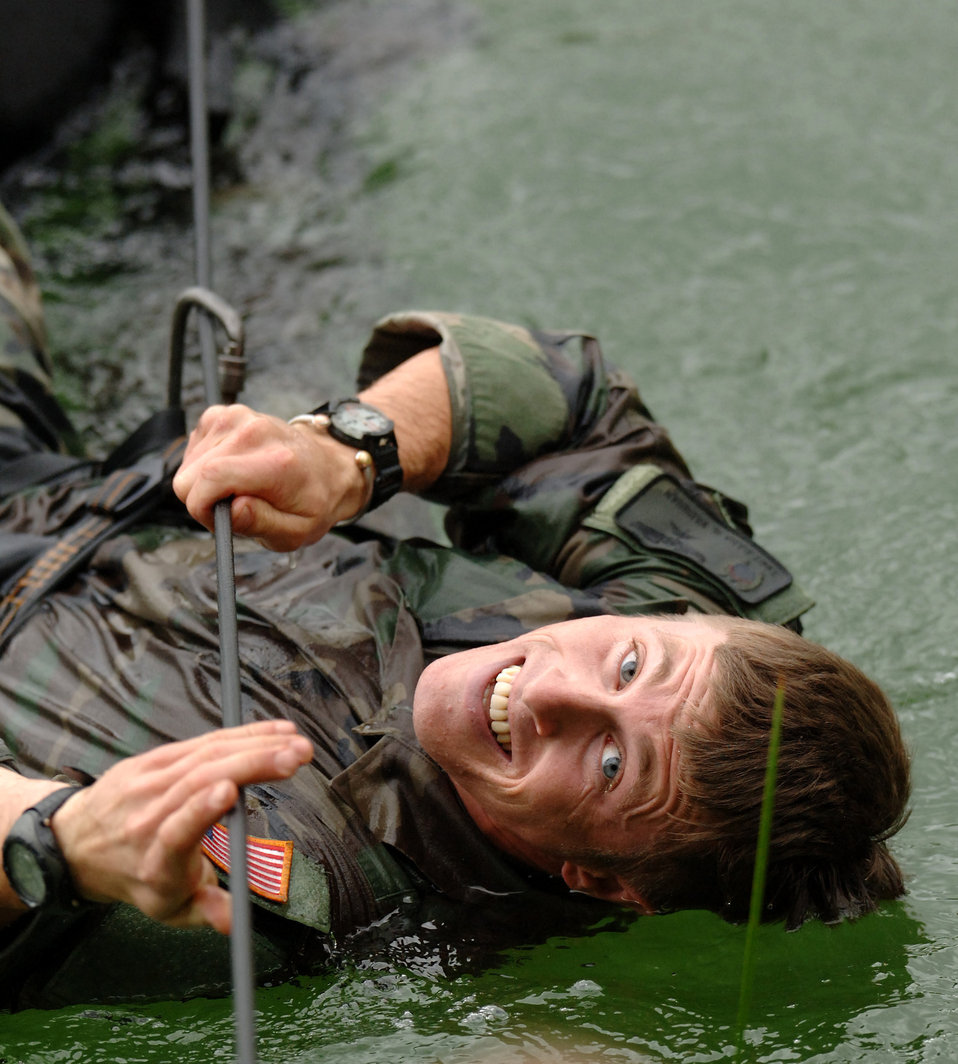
Joint training in Vermont mountains

Tech. Sgt. Dana Vaughan pulls himself across a cold Vermont pond on Thursday, June 8, 2006. Sergeant Vaughan, a pararescueman from Nellis Air Force Base, Nev., is attending a two-week summer mountaineer training course at the Vermont National Guard's Army Mountain Warfare School in Jericho, Vt.